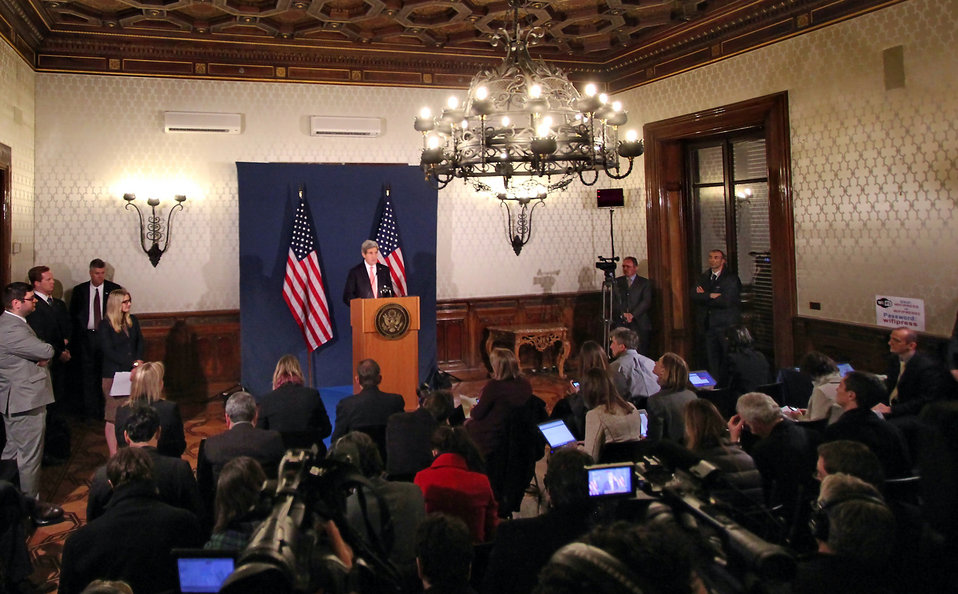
Secretary Kerry Addresses Reporters in Rome

U.S. Secretary of State John Kerry addresses reporters after meetings on Libya and Ukraine in Rome, Italy, on March 6, 2014.